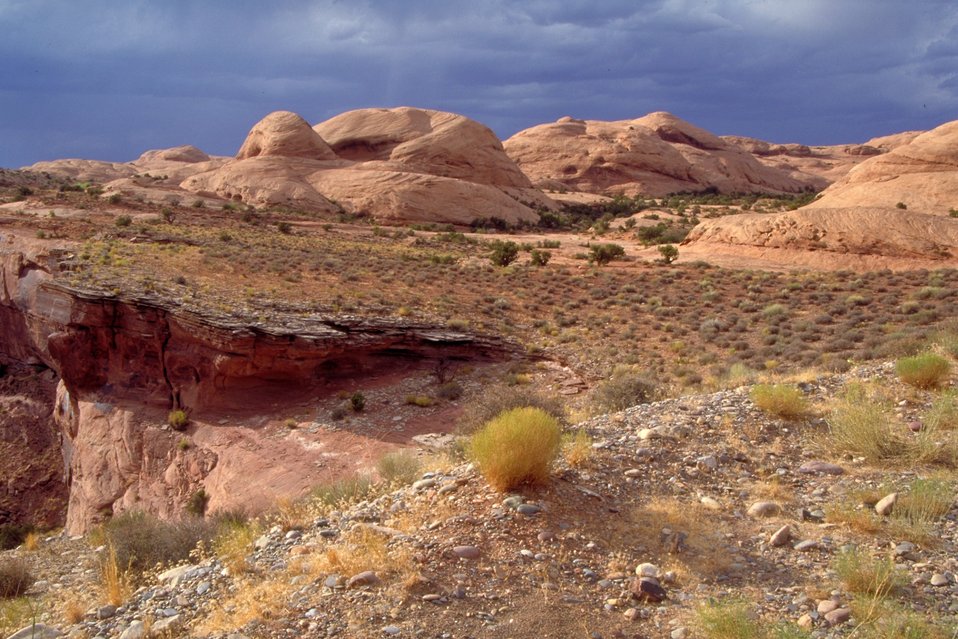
Poison Spider Trail area near Moab, Utah.